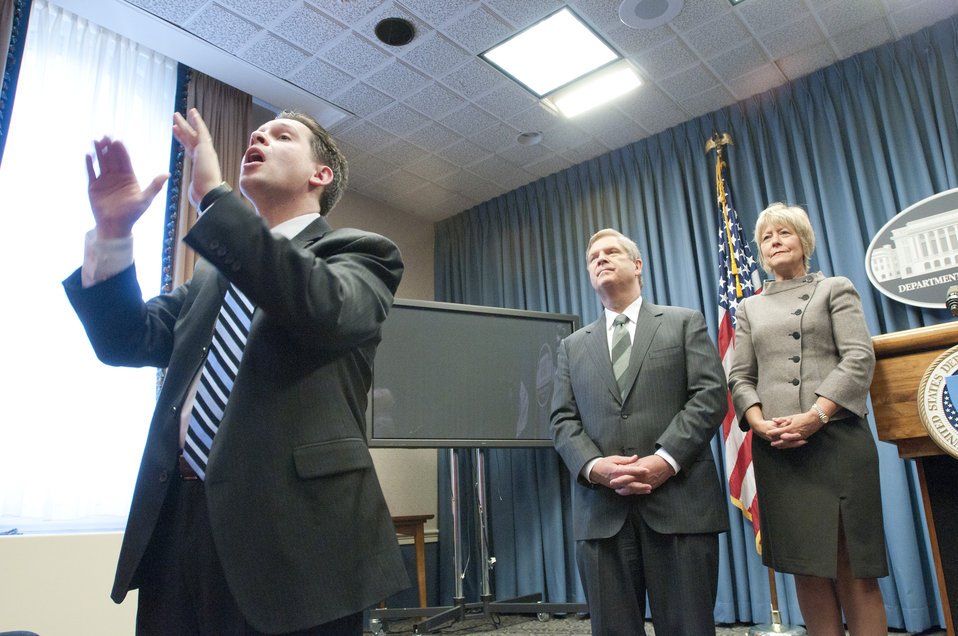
Mason City High School Director of Choral Activities Joel Everist (left) led a group of more than 90 students in song for Secretary Tom Vilsack and his wife Christie on March 25, 2011 in the U.S. Department of Agriculture (USDA) headquarters in Washington, D.C.